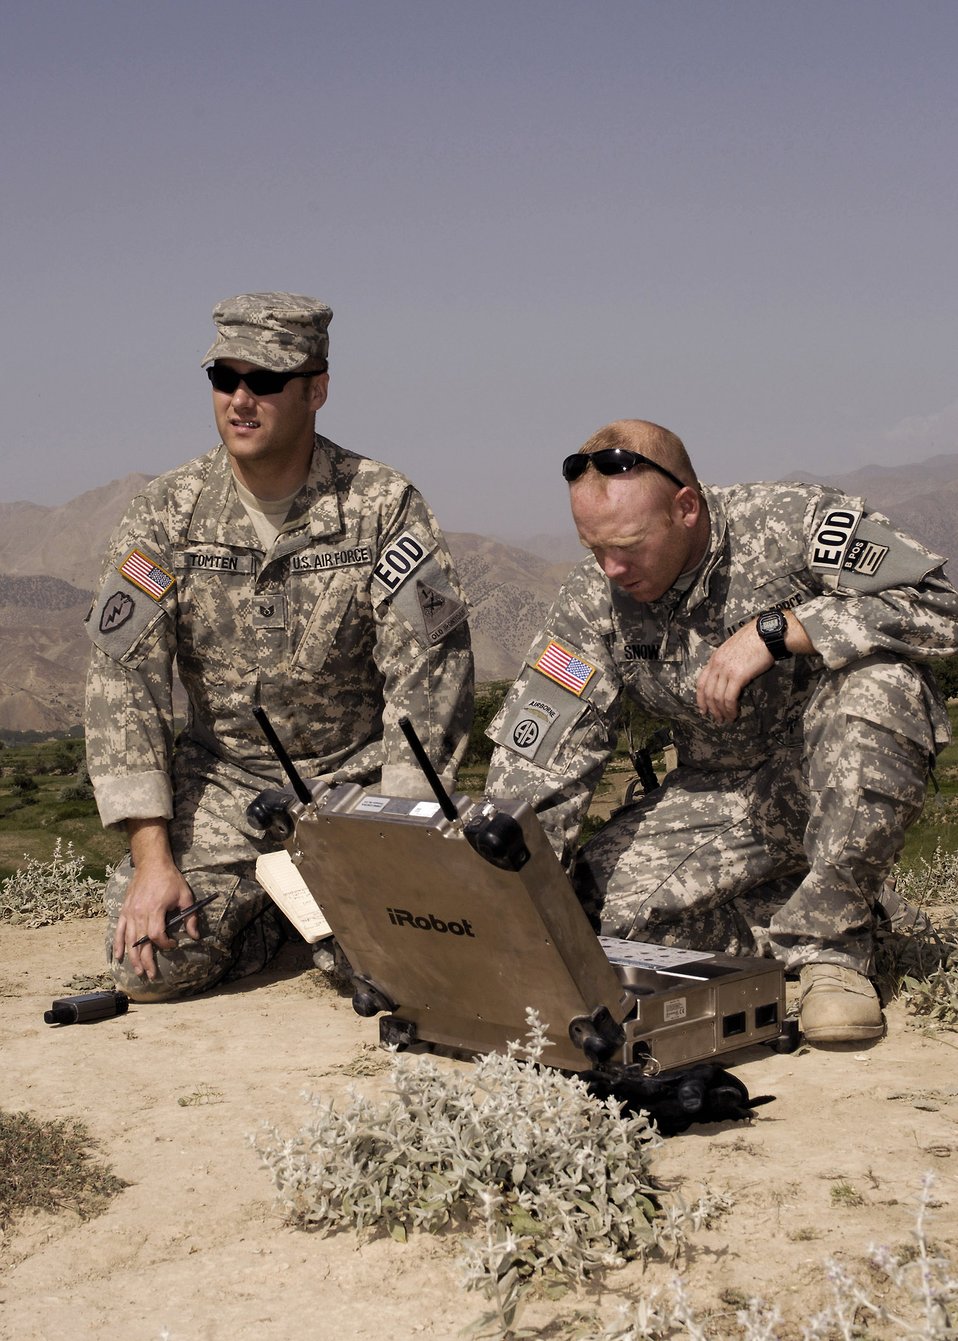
Coalition forces, local government thwart IED in Panjshir

Tech. Sgt. Jay Tomten (left) 755th Air Expeditionary Group Explosive Ordinance Disposal team leader and Staff Sgt. Jason Snow 755th Air Expeditionary Group robot operator prepare to send a PACBOT to a incident site. Two 107mm rockets on a timer were found to be aimed at a coalition FOB that was found by a local farmer who contacted authorities. Sergeant Tomten is deployed from the 49th Civil Engineer Squadron EOD flight Holloman Air Force Base N.M. and Sergeant Snow is deployed from the 1st CES EOD flight Langley AFB, Va.